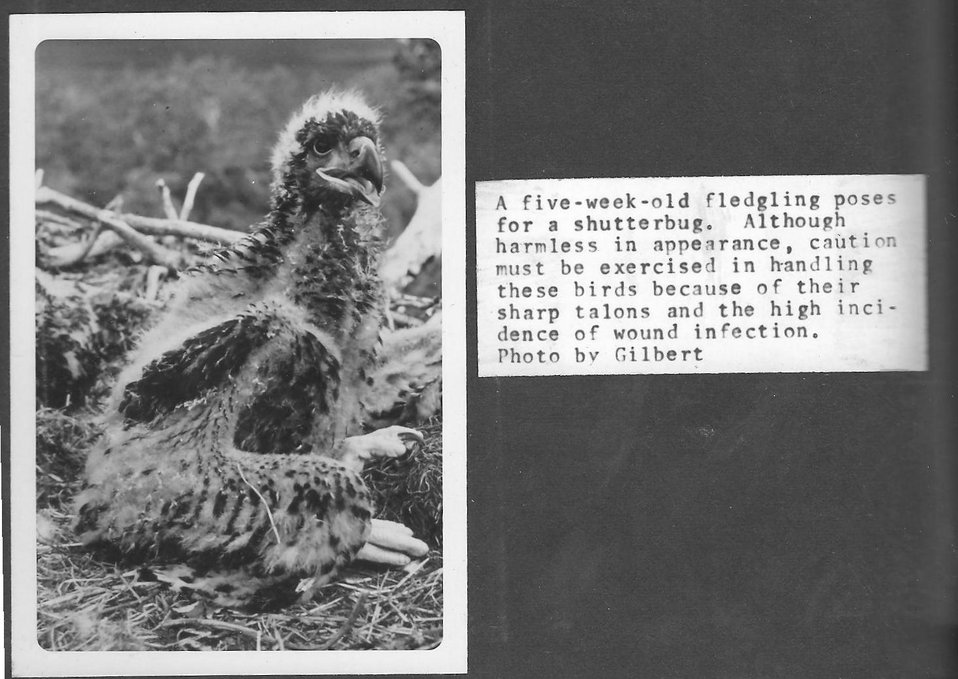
(1967) Feisty Eaglet

Credit: USFWS

Source and Contact: Kodiak National Wildlife Refuge